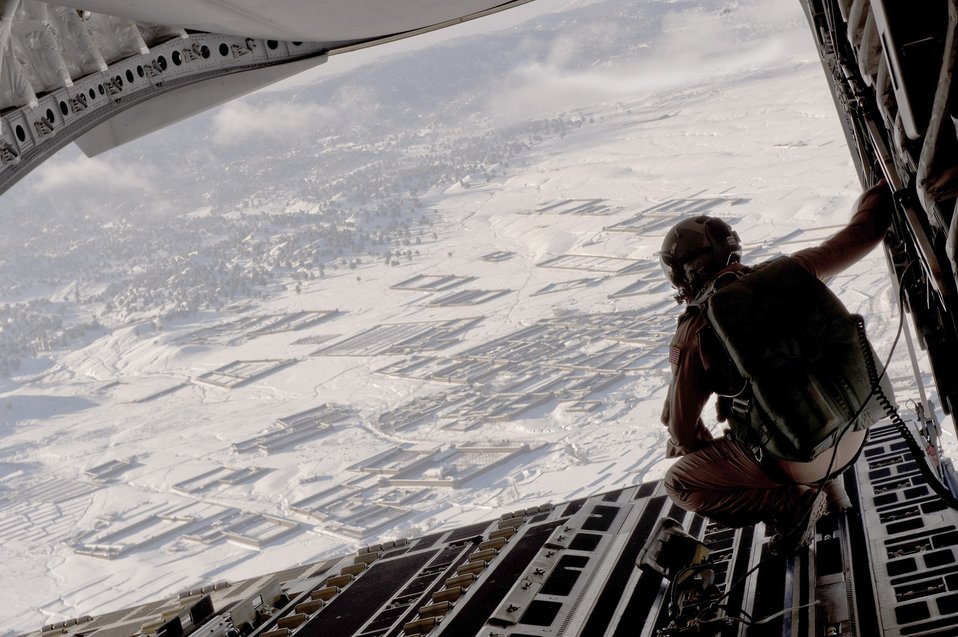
Air delivery cargo drop

Staff Sgt. Christopher Bankston watches from a C-17 Globemaster III Mar. 3, 2011, as air delivery cargo drops to a remote operating base in Afghanistan. Sergeant Bankston is a loadmaster assigned to the 816th Expeditionary Airlift Squadron.